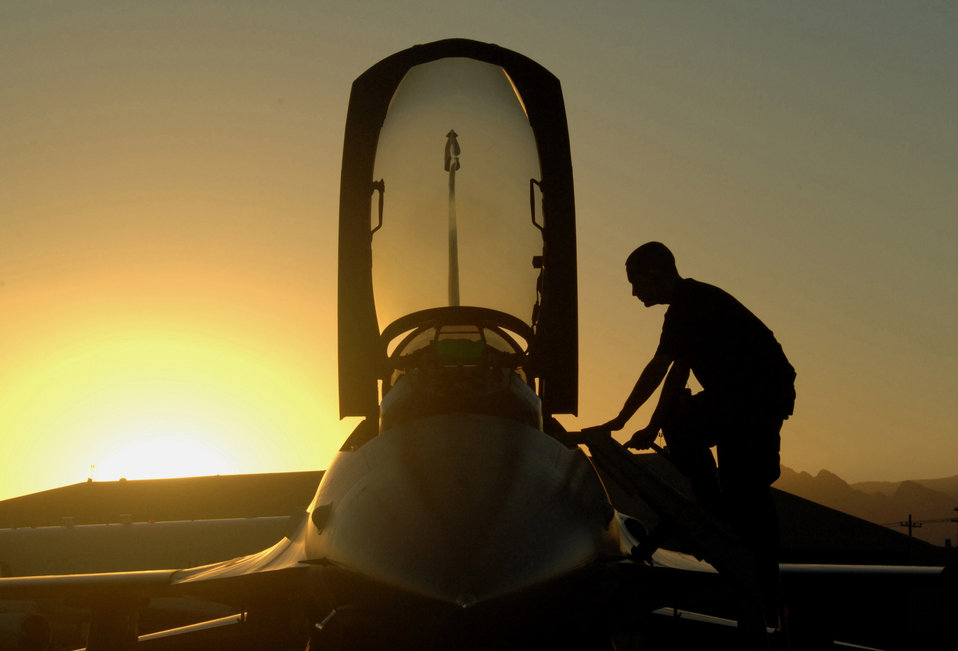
Sun sets on a Falcon

Senior Airman Kyle Renbarger performs an F-16 Fighting Falcon post flight inspection Oct. 18 at Nellis Air Force Base, Nev. Airman Renbarger is a 63rd Fighter Squadron crew chief from Luke AFB, Ariz.